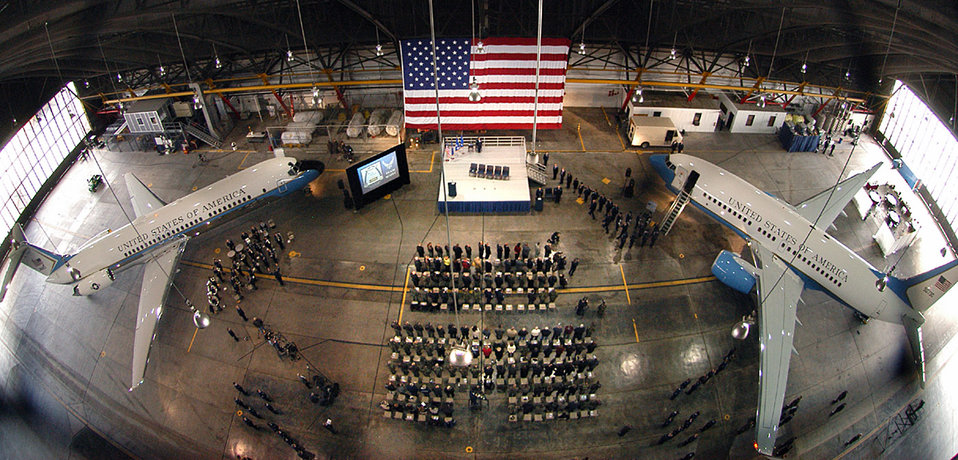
New transport

Airmen in the Air Force Reserve Command's 932nd Airlift Wing received the first new C-40C transport (right) during a special ceremony Feb. 26 at Scott Air Force Base, Ill. The plane on the left is a C-9C, also flown by 932nd aircrews. Both planes are used for the distinguished visitor mission.